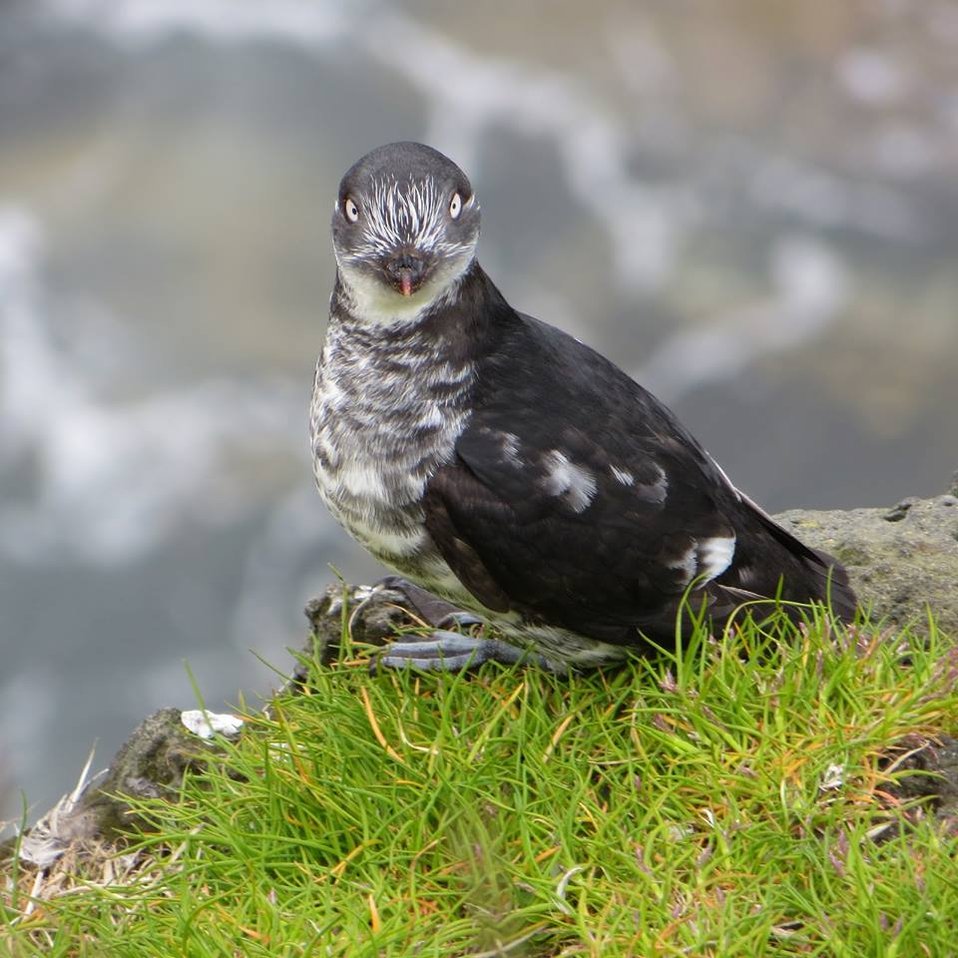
Least auklet

Alaska Maritime National Wildlife Refuge.